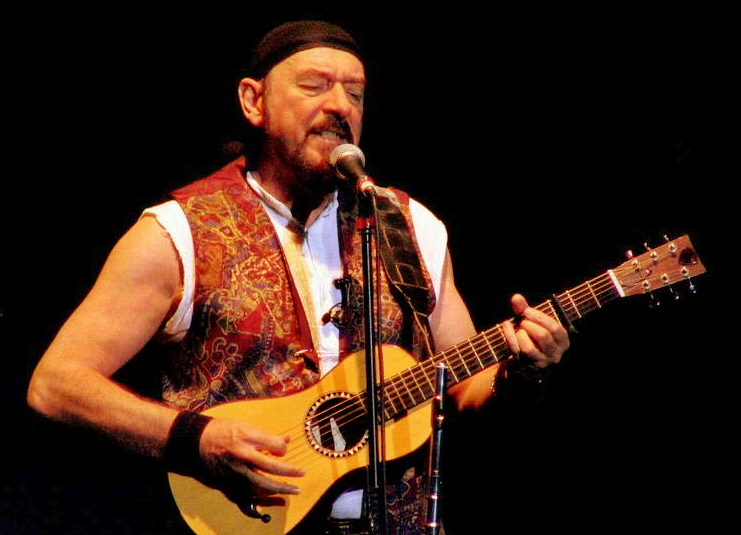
Gemaakt op 5 mei in het Teatro Nazionale, Milaan, Italië.